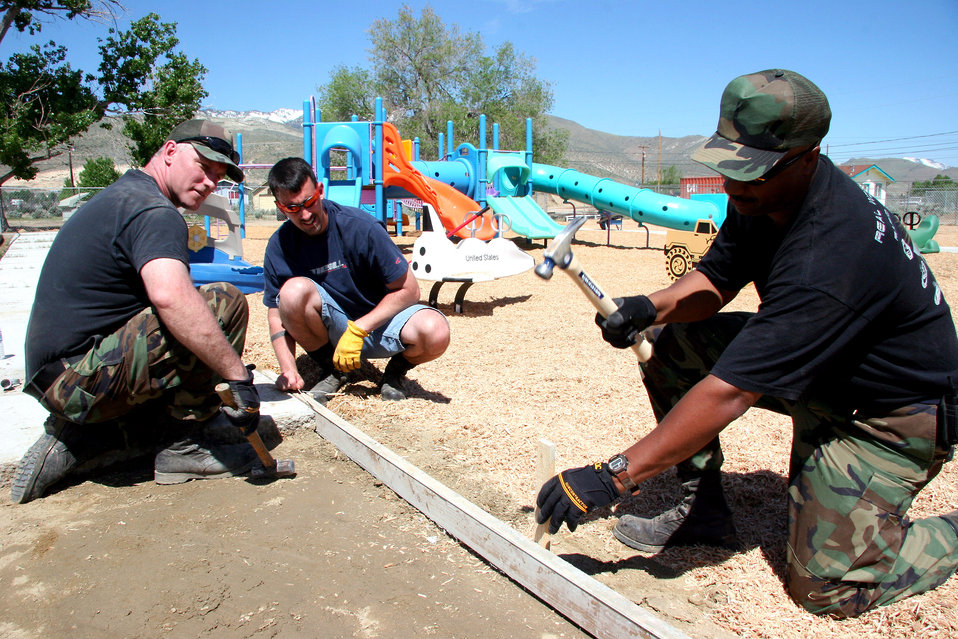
939 Washoe IRT

Staff Sgt. Arnold Renken, technician Cliff Prejean and Master Sgt. Jon Conway work together to build forms for concrete to make sidewalks at the tribal head start building on the Washoe Indian Reservation near Carson City, Nev. May 16, 2006. They are with the 939th Civil Engineer Squadron.